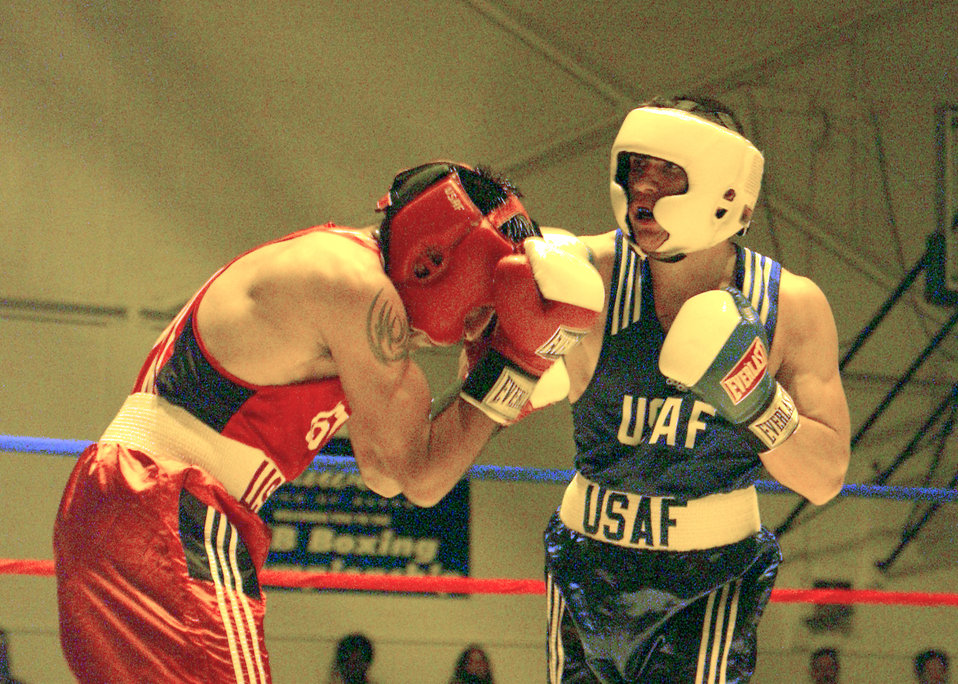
Boxing

LACKLAND AIR FORCE BASE, Texas -- Airman 1st Class Robert Luna (right) lands a punch on Senior Airman Richard Mora during a light-welterweight bout in the 2004 Air Force Boxing Championships here Nov. 7. Luna is assigned to the 7th Logistics Readiness Squadron at Dyess Air Force Base, Texas. Mora is assigned to the 552nd Consolidated Maintenance Squadron at Tinker AFB, Okla. Luna won the match.